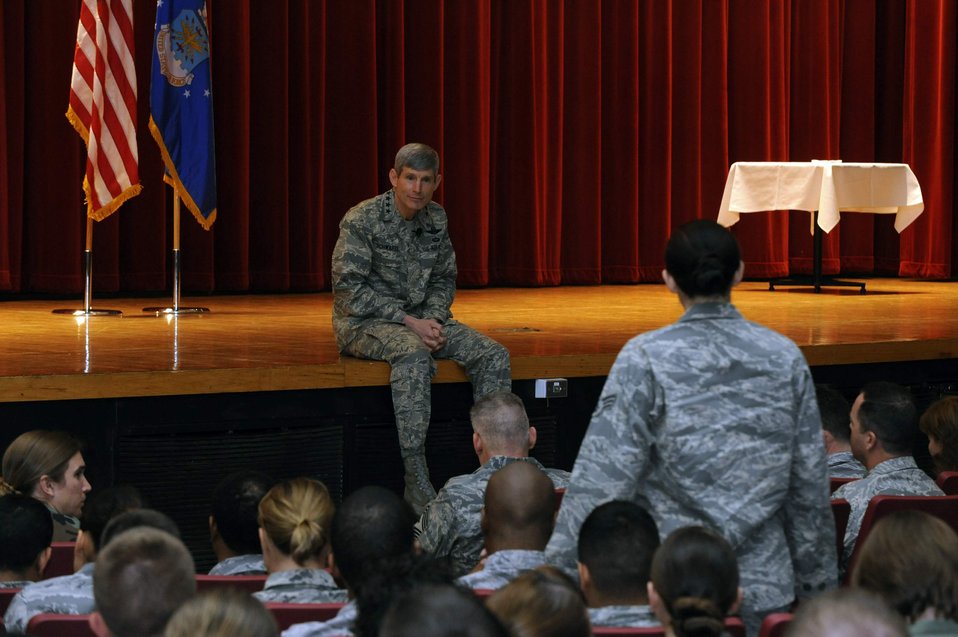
CSAF to Airmen: Everyone is important

Gen. Norton Schwartz outlines current military issues Feb. 20 during a town hall meeting at the Bob Hope Theater on Lackland Air Force Base, Texas. General Schwartz is the Air Force chief of staff.